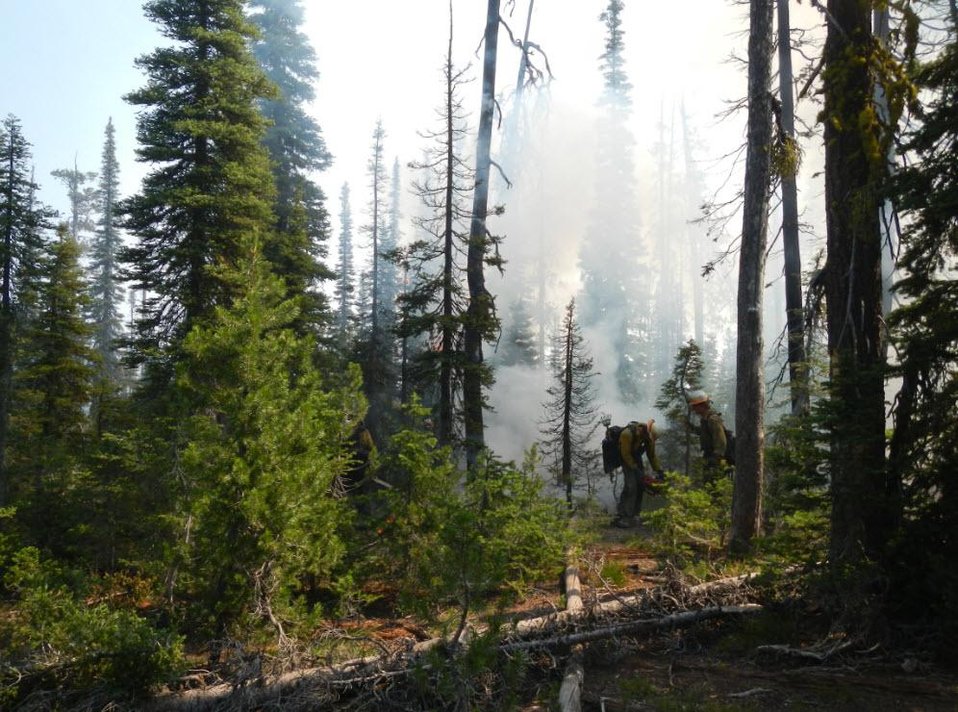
Firefighters work in dense fuels area of the Ridge Fire. The Ridge Fire in the Boise National Forest, ID near Lowman, ID began on Jul. 16, 2013 by lightning and has consumed approximately 5,143 acres. The Ridge Fire is approximately 20% contained.